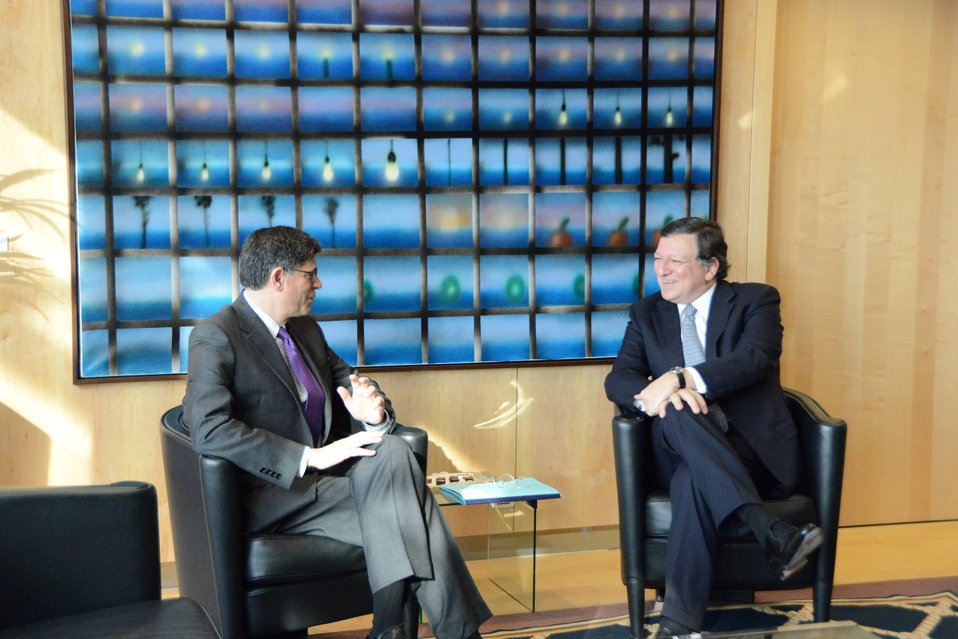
Secretary Lew meets with President of the European Commission José Manuel Barroso in Brussels, April 8, 2013

Secretary Lew is visiting Europe to meet with his counterparts on economic developments in the region and policies to boost global growth and promote financial stability.